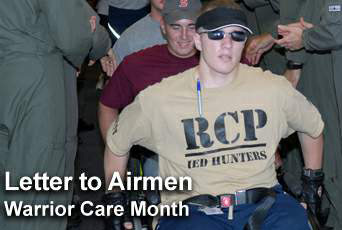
Letter to Airmen

In his November Letter to Airmen, Secretary of the Air Force Michael B. Donley focuses his attention on Warrior Care month.